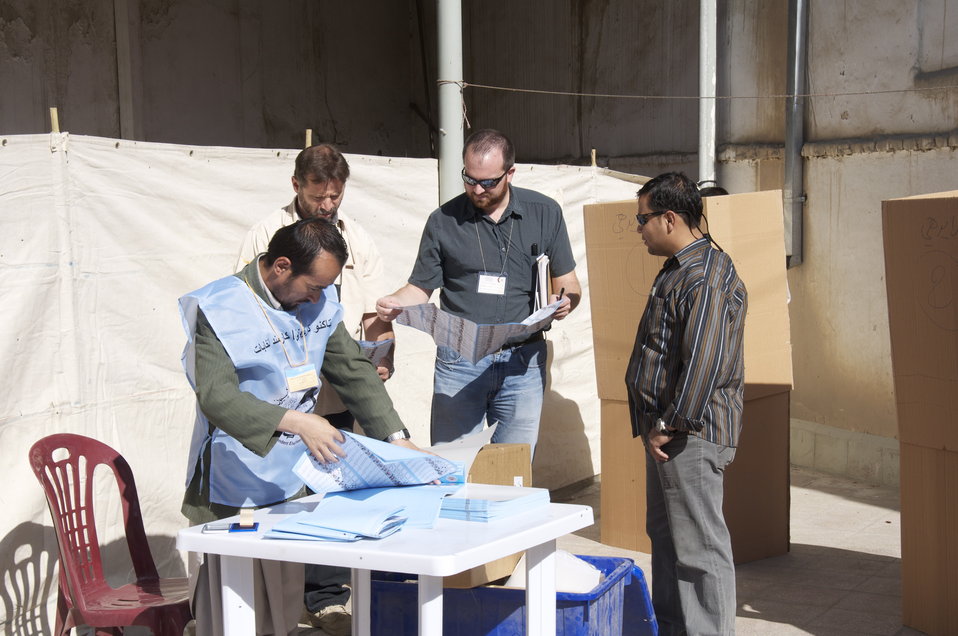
Election Worker and Observers